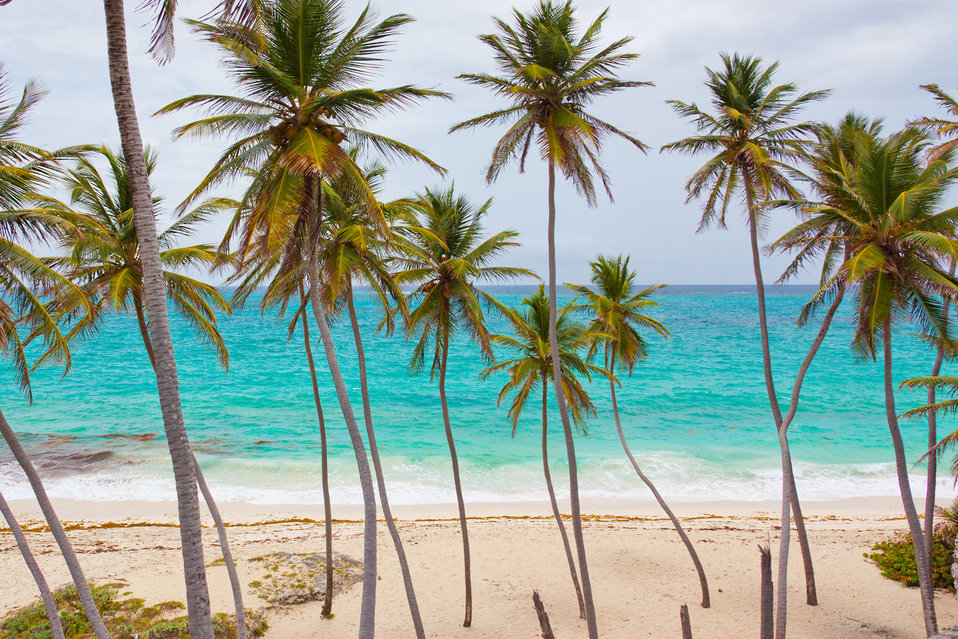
Beach with palm trees

Beautiful tropical beach with palm trees.